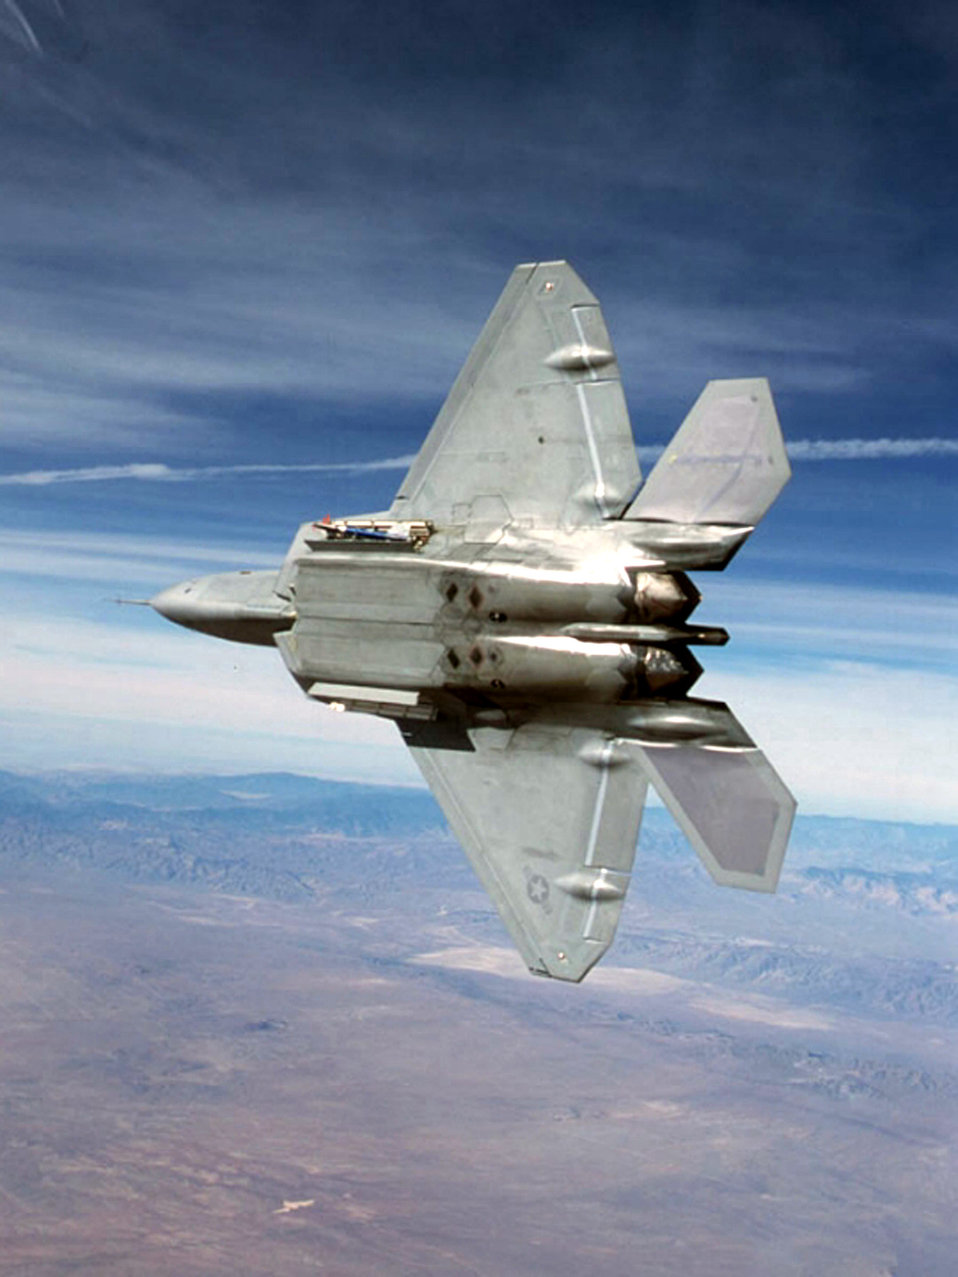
Raptor claws

EDWARDS AIR FORCE BASE, Calif. -- The F/A-22 Raptor shows its claws during a side weapons bay test here. The F/A-22 is designed to carry two AIM-9M or Sidewinder short-range, heat-seeking air-to-air missiles in its side weapons bays.